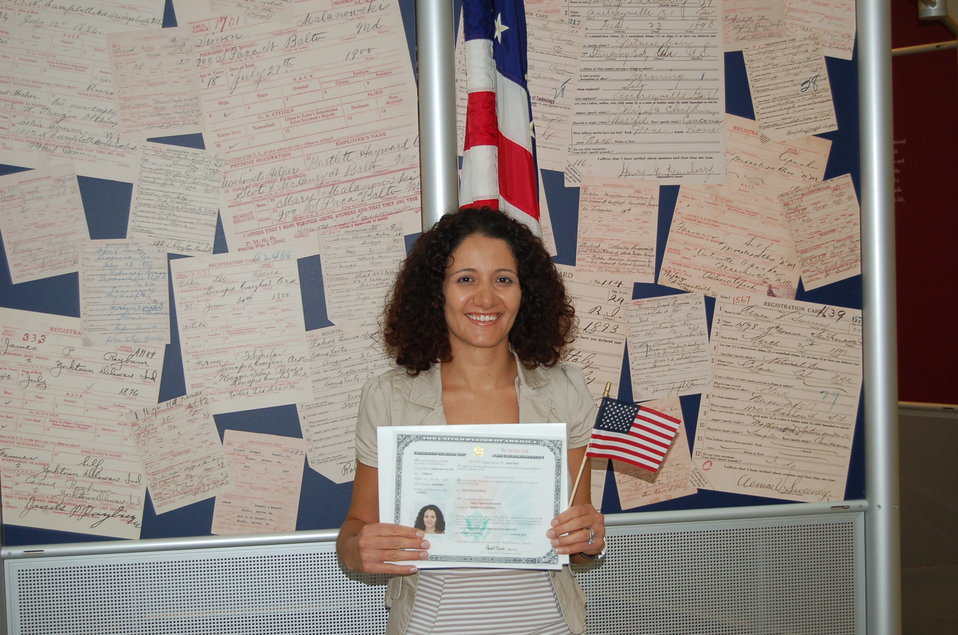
New Citizens